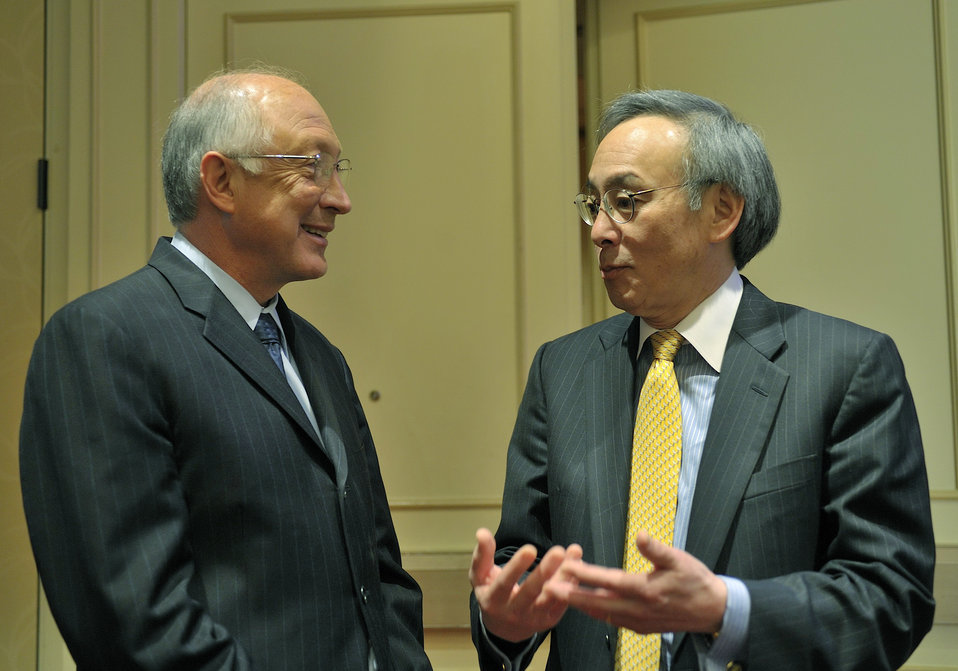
Tribal Energy Summit

Secretary Salazar congratulates Secretary Chu on successful Tribal Summit